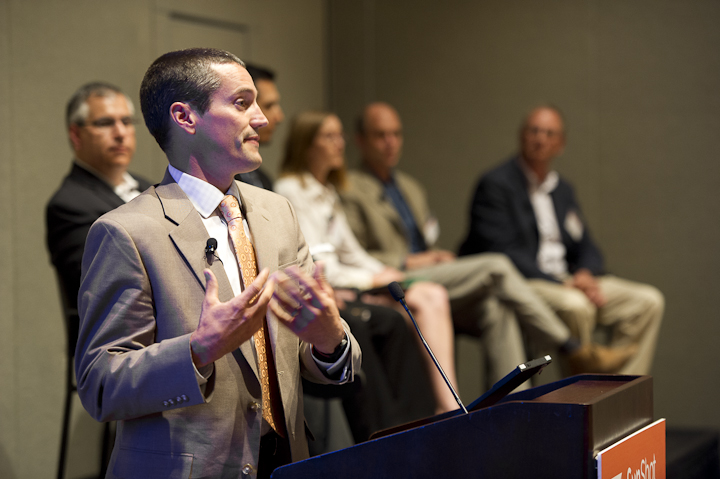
SunShot Soft Costs

June 13, 2012- Wade Crowfoot speaks at the Soft Costs break out session at the Technology Forum at the SunShot Grand Challenge Summit and Technology Forum in Denver, Colorado.